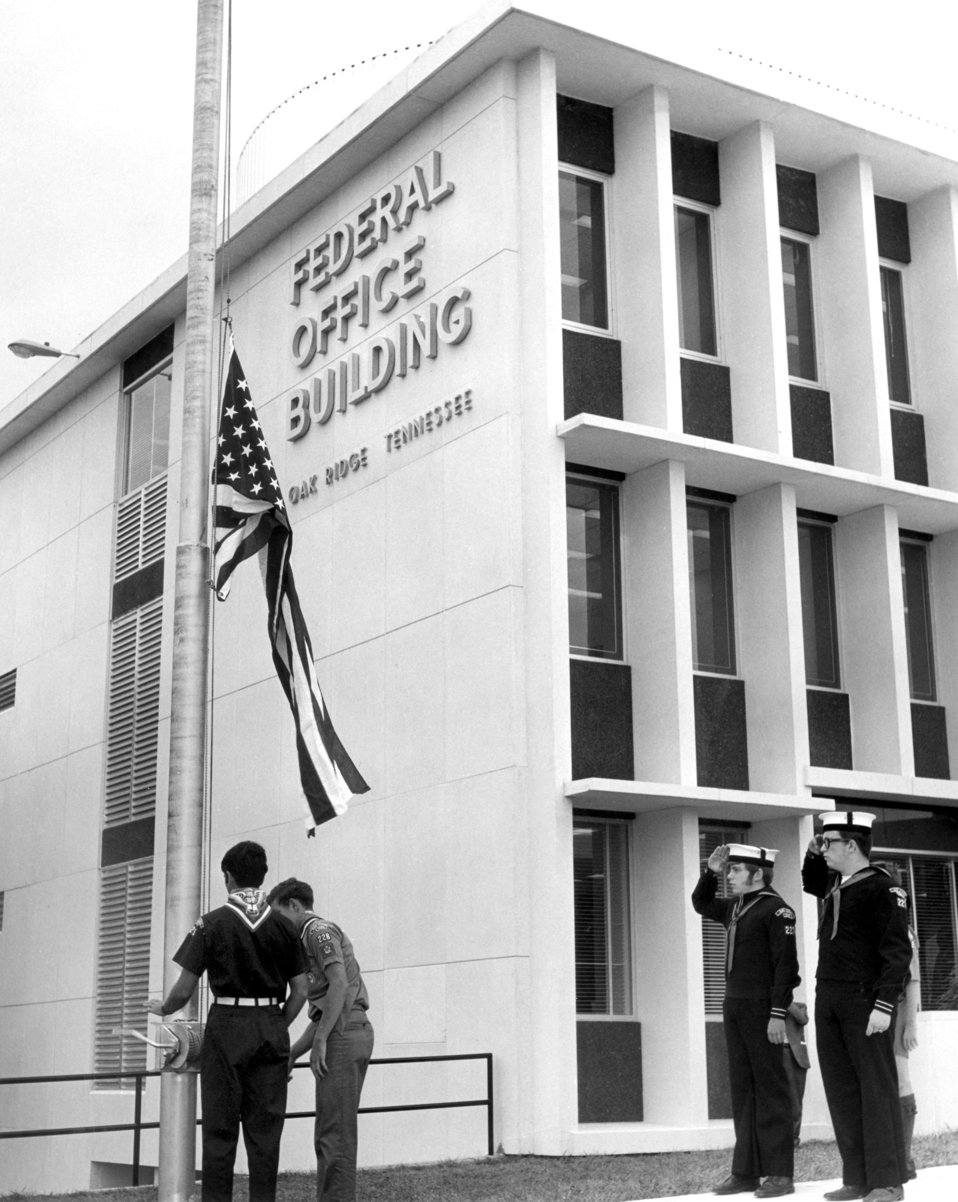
Formal Deication New AEC Federal Office BLD Oak Ridge

70-164-6 DOE photo by Frank Hoffman
Formal Deication New AEC Federal Office BLD Oak Ridge Tennessee 6-27-1970